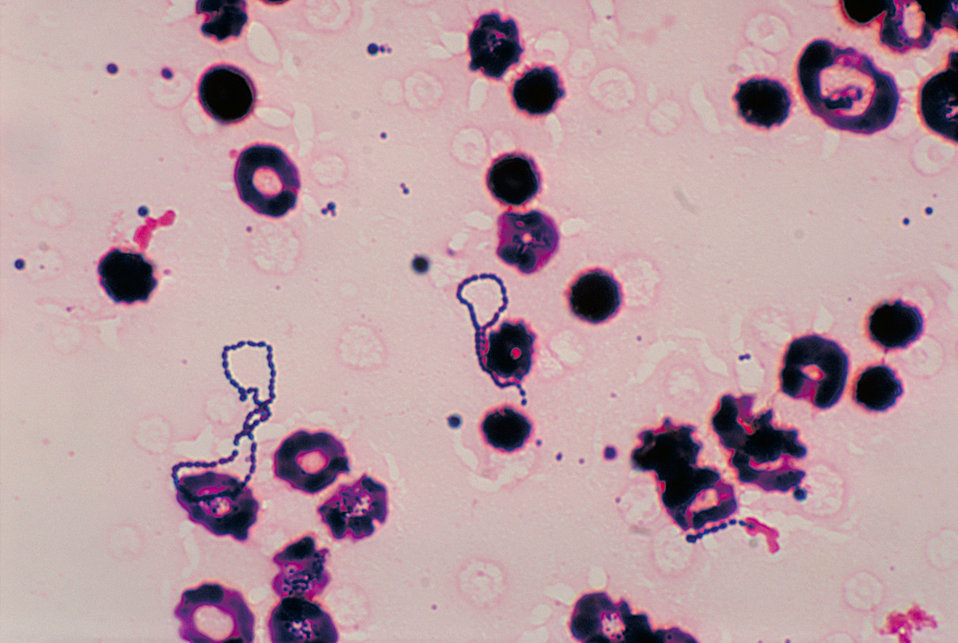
This is a photomicrograph of Streptococcus viridans bacteria that had been grown in a blood culture.